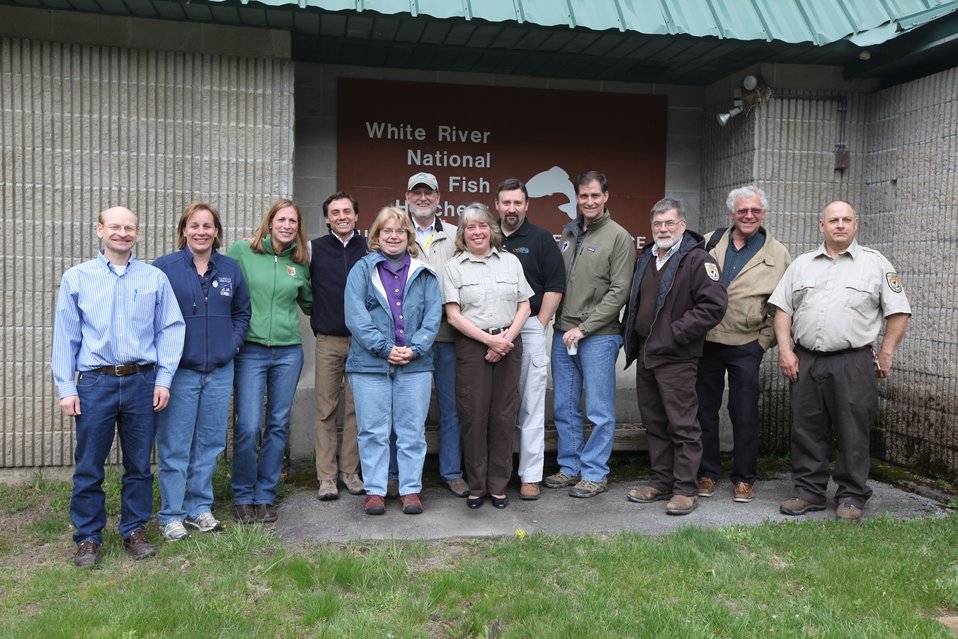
Dan Ashe, Northeast Regional Directorate, Regional Office and White River National Fish Hatchery Staff

U.S. Fish & Wildlife Service Director Dan Ashe visits the Northeast Region
for a tour of the White River National Fish Hatchery in Bethel, Vermont on
April 27, 2012. The hatchery was devastated by Tropical Storm Irene and
Dan Ashe had the chance to meet and thank the staff for their heroic work.
Director Ashe also visited restoration/flood response/fish passage project
sites in Rochester, Vermont and met with local officials and staff from the
White River Partnership.